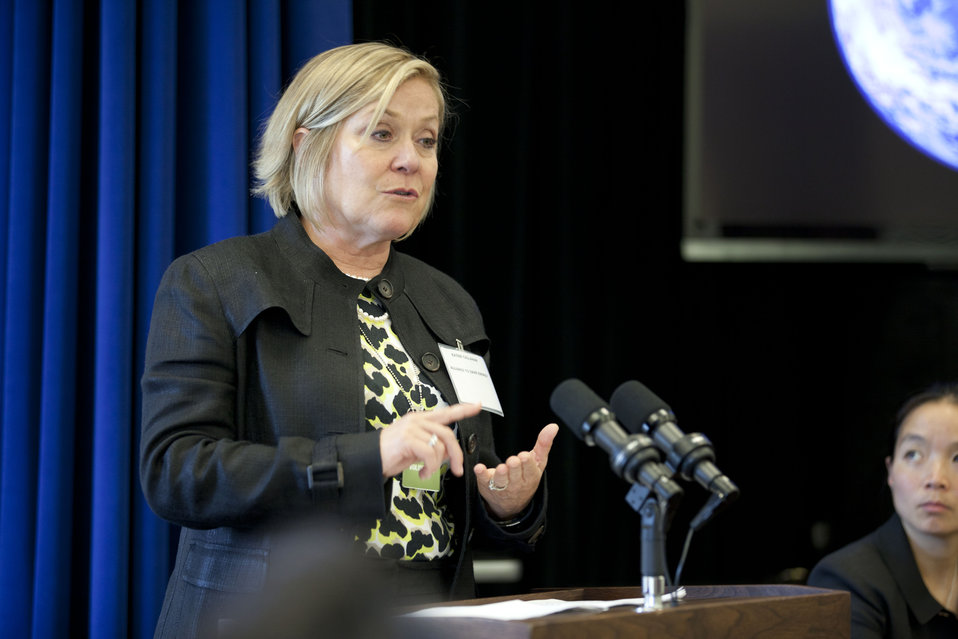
White House Leadership Summit on Women, Climate and Energy

Kateri Callahan, President of the Alliance to Save Energy, took part on the Climate Science and Energy Solutions Panel.